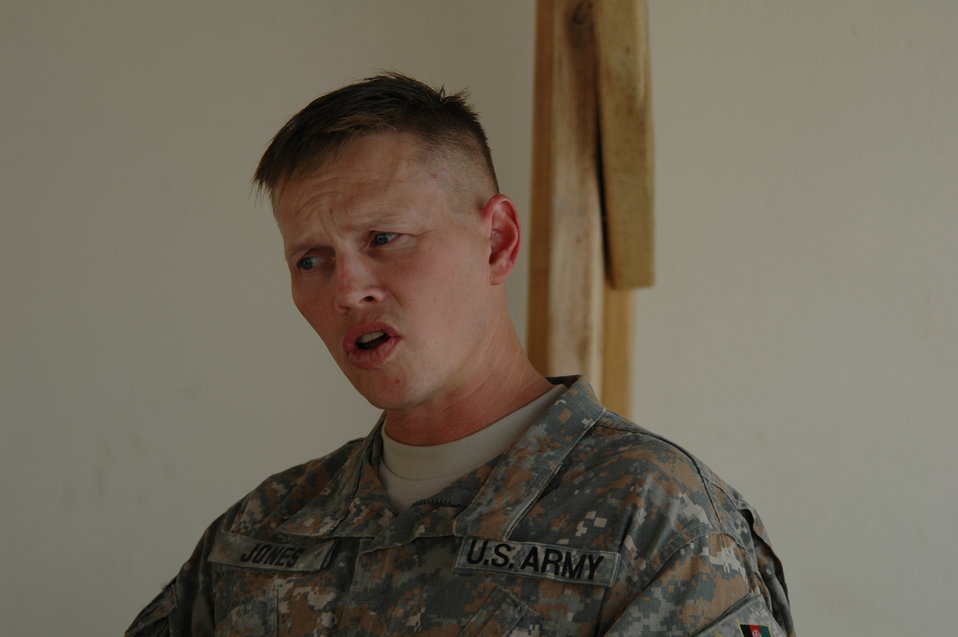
CODEL Berman